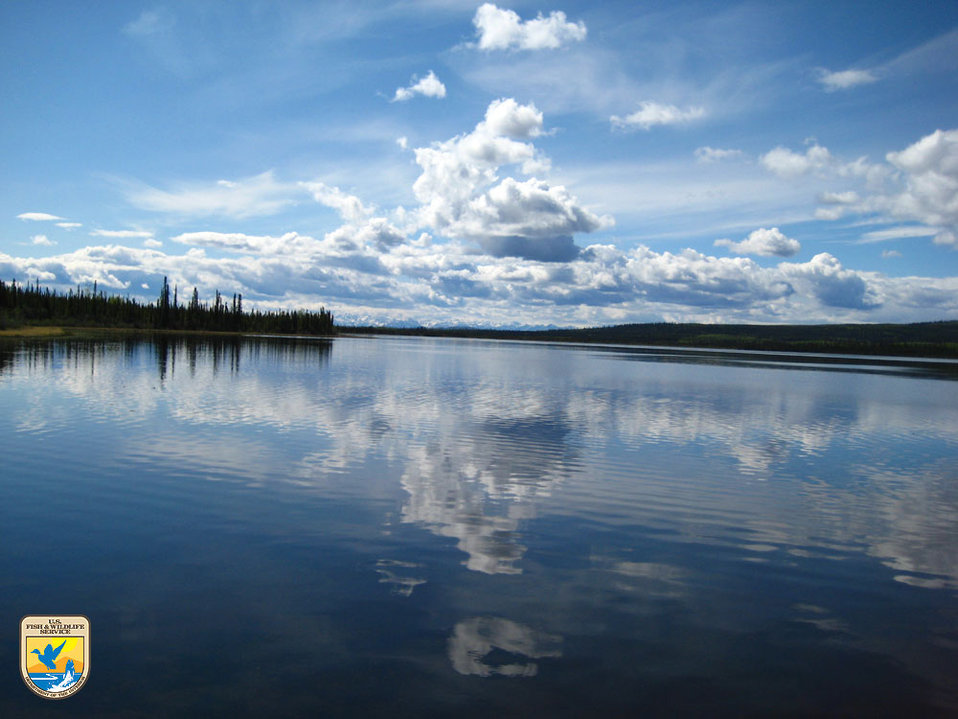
Deadman Lake - Region 7

Deadman Lake in Alaska